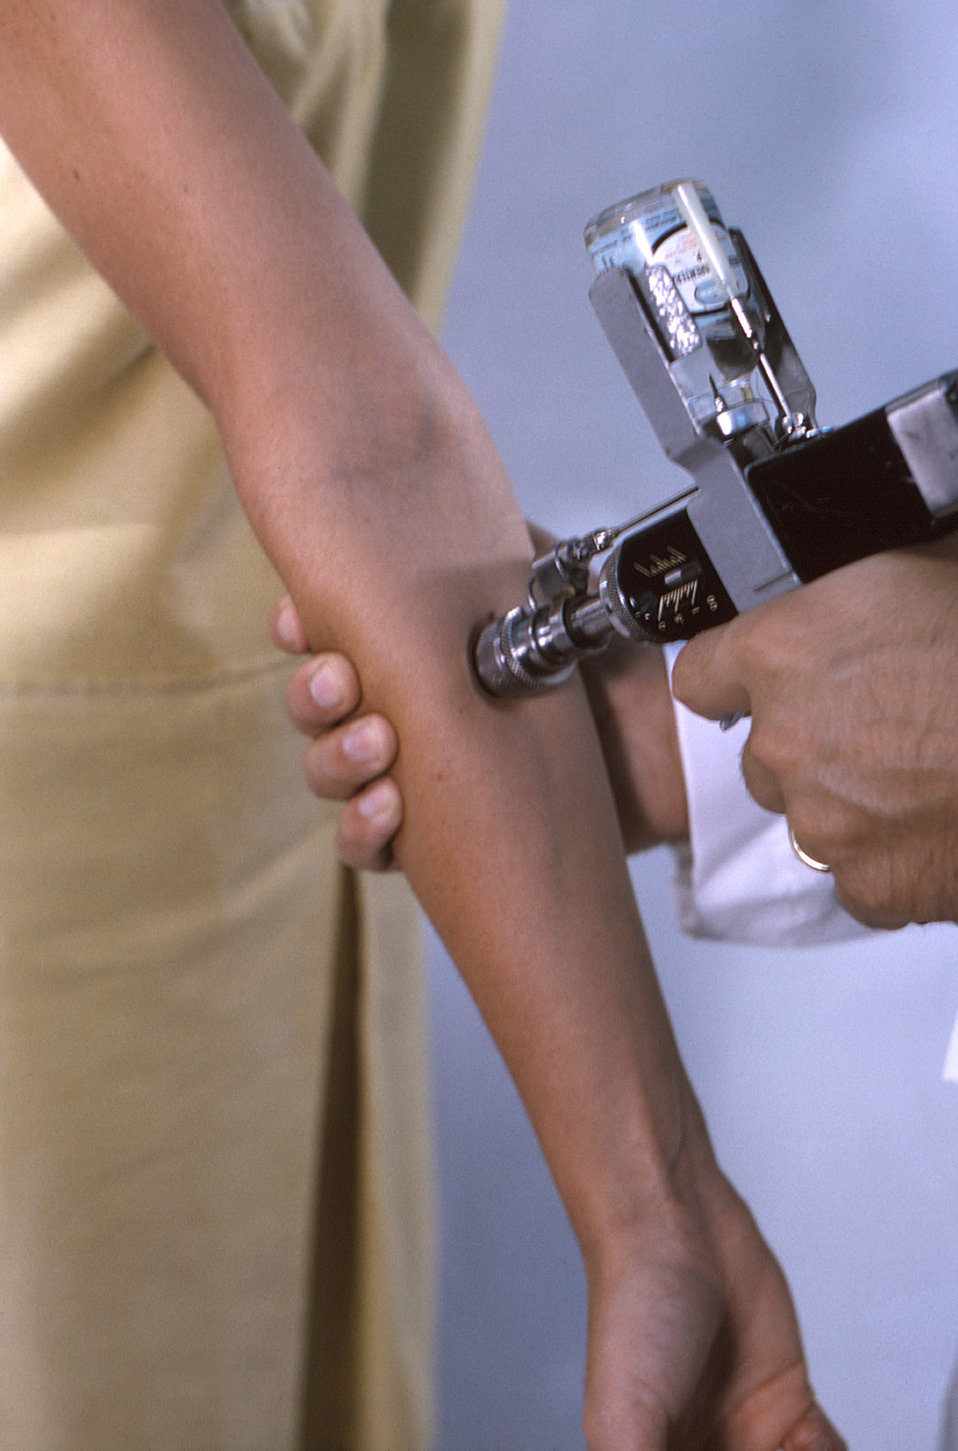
This historic 1965 photograph depicted a hand-held jet-injector, also known as a Ped-O-Jet, that was being used to introduce a vaccine into a recipient's right forearm. The image was used to show how one properly places the jet-injector during vaccine administration.